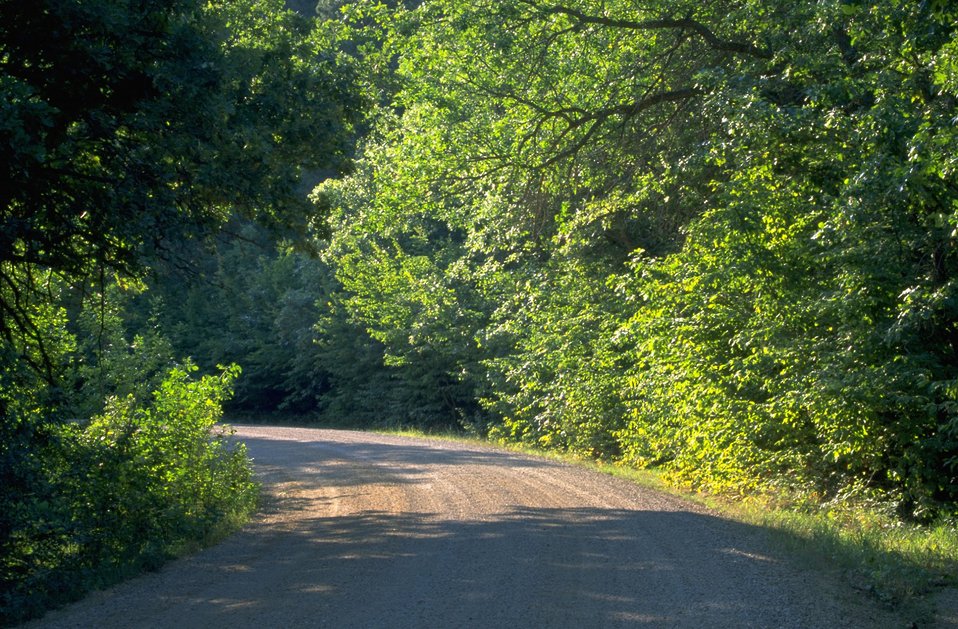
Back Country Byway at the south end of Fort Meade